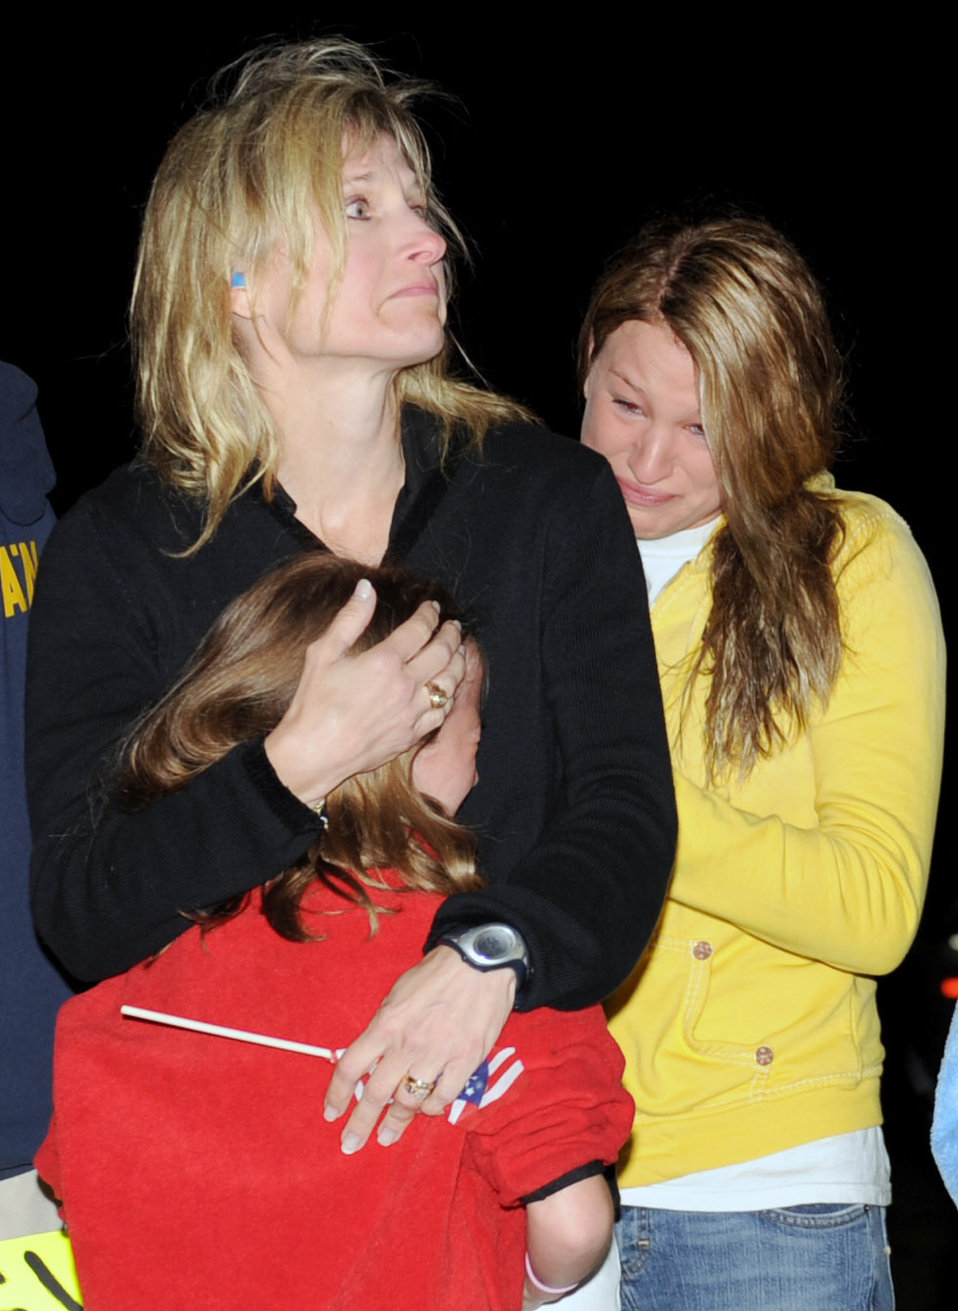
Airmen mobilize to confront Afghan insurgency

Debbe Jo Allen embraces her two daughters, Taylor and Hannah, as she watches her husband, Lt. Col. Neil Allen, depart from Seymour Johnson Air Force Base, N.C., April 29. Colonel Allen is the 336th Fighter Squadron commander and is deploying to Bagram Airfield, Afghanistan, for four months.